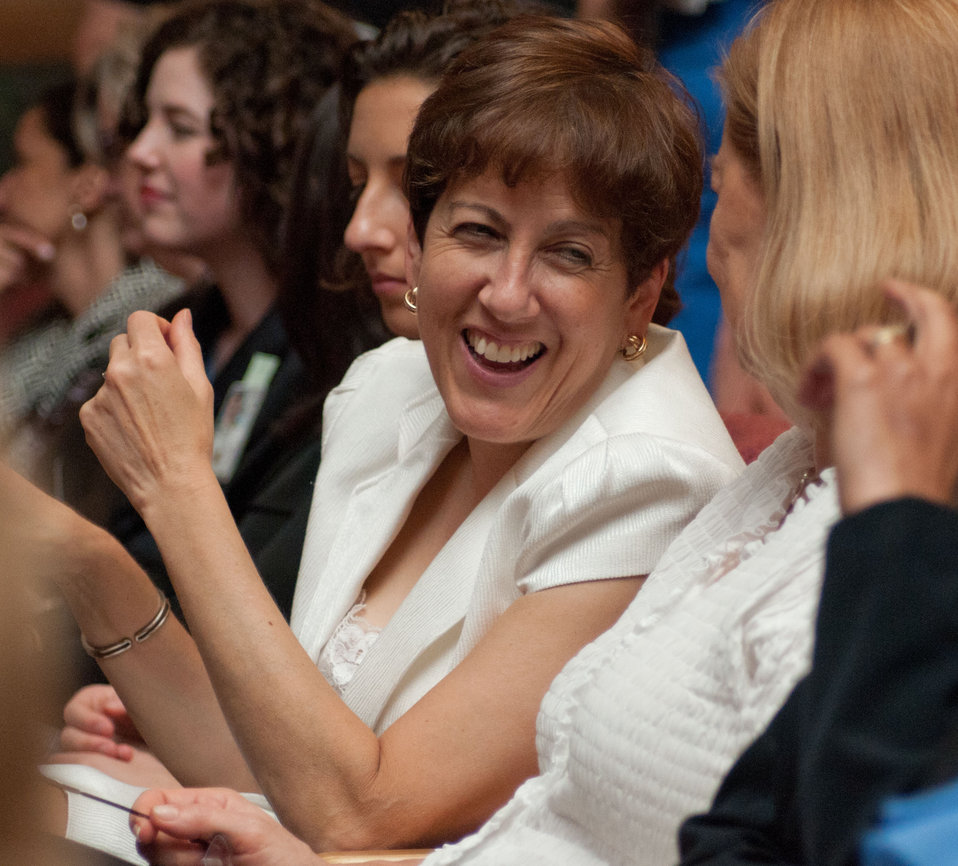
Members of the audience relax waiting for the announcement from First Lady Michelle Obama, Agriculture Secretary Tom Vilsack and Surgeon General Regina Benjamin about the new food icon MyPlate at the U.S. Department of Agriculture (USDA) in Washington, D.C on Thursday, Jun. 2, 2011. MyPlate is an easy-to-understand visual cue to help consumers adopt healthy eating habits that are consistent with the 2010 Dietary Guidelines for Americans and will replace the USDA’s MyPyramid image as the government’s primary food group symbol. MyPyramid will remain available to interested health professionals and nutrition educators in a special section of the new website.